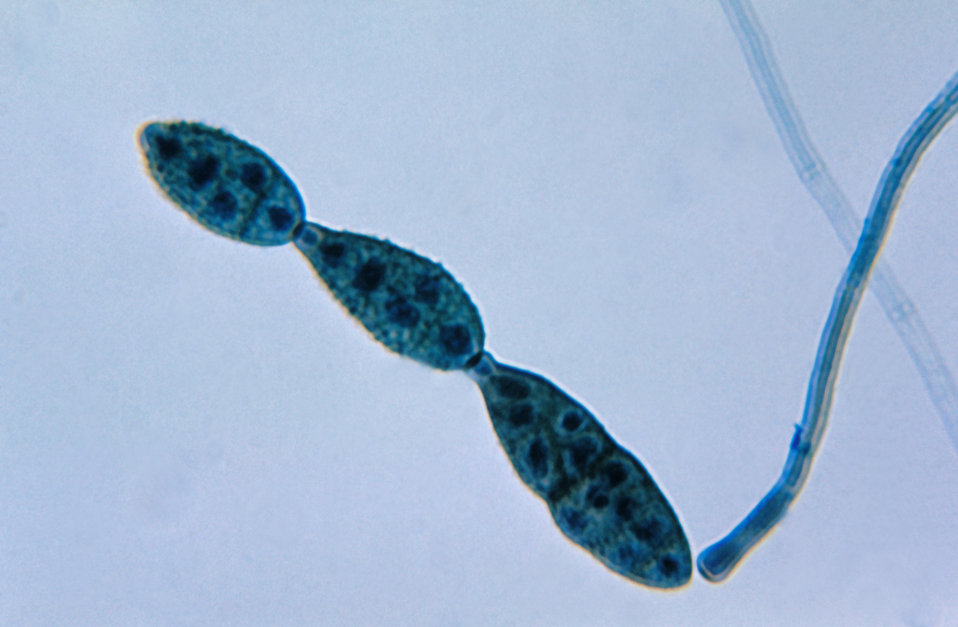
This photomicrograph shows a chain of conidia of a Alternaria sp. fungus, which can be a cause of phaeohyphomycosis.